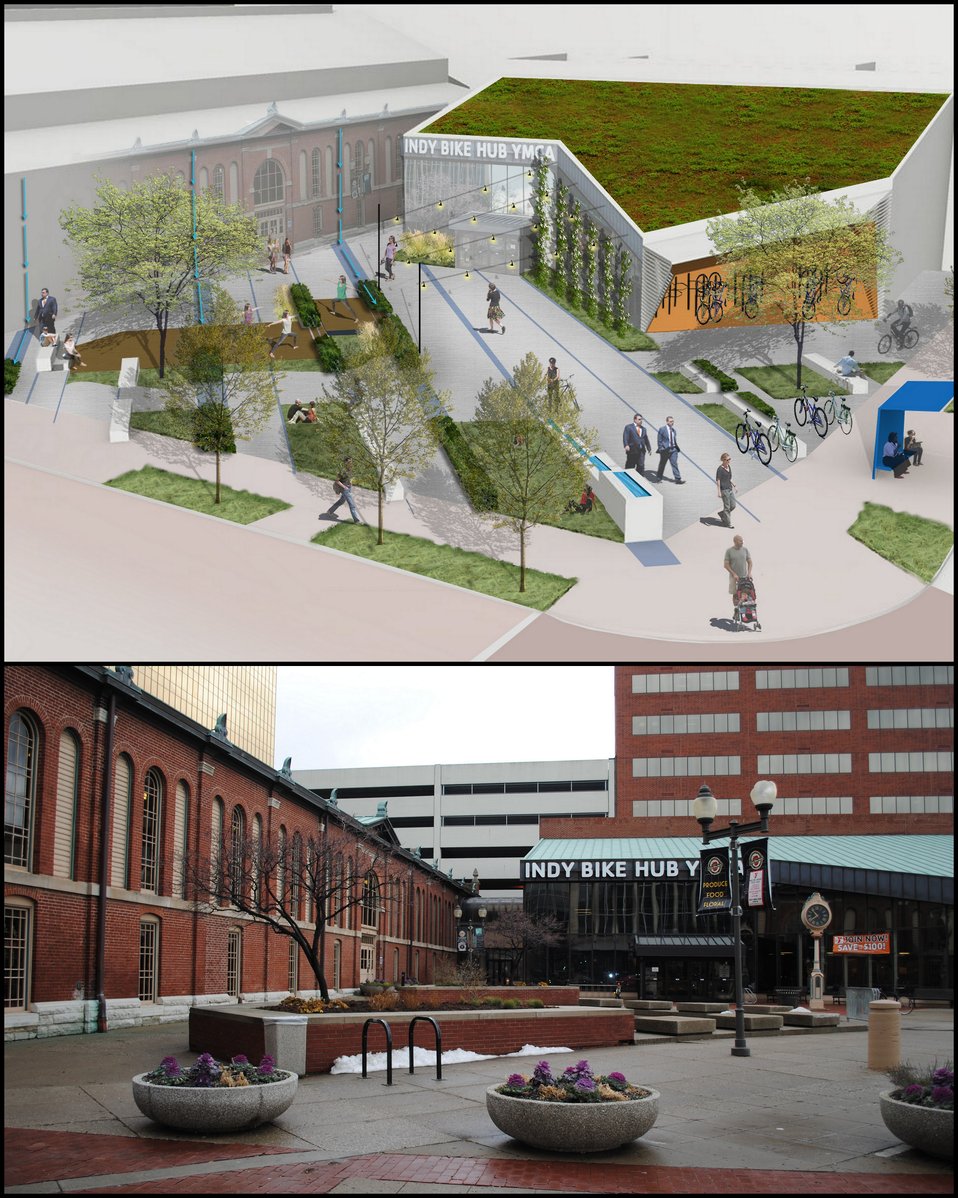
Greening America’s Capitals Before / After, Indianapolis, IN

The design concept for City Market East Plaza reorganizes the space to create direct walking paths and accessible green spaces. It also includes activity and event space, amenities for bicycle and transit riders, and increased plantings.

www.epa.gov/smartgrowth/greencapitals.htm

EPA's Greening America's Capitals program helps cities include sustainable design strategies --such as green infrastructure -- in their planning and development. These concepts lead to distinctive neighborhoods that enjoy multiple social, economic, and environmental benefits. Cities are selected through a competitive application process, and many have begun to implement these enhancements with private, as well as local, state, and other federal, investments.

December 3, 2013
Images courtesy of Origin 4 Design.